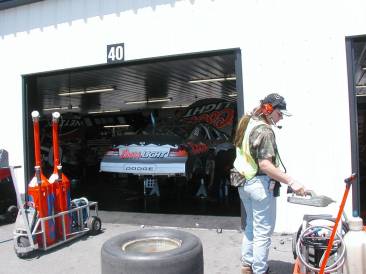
NASCAR monitoring

An EPA emergency responder checks for radiation and hazardous chemicals at the NASCAR Pocono race.